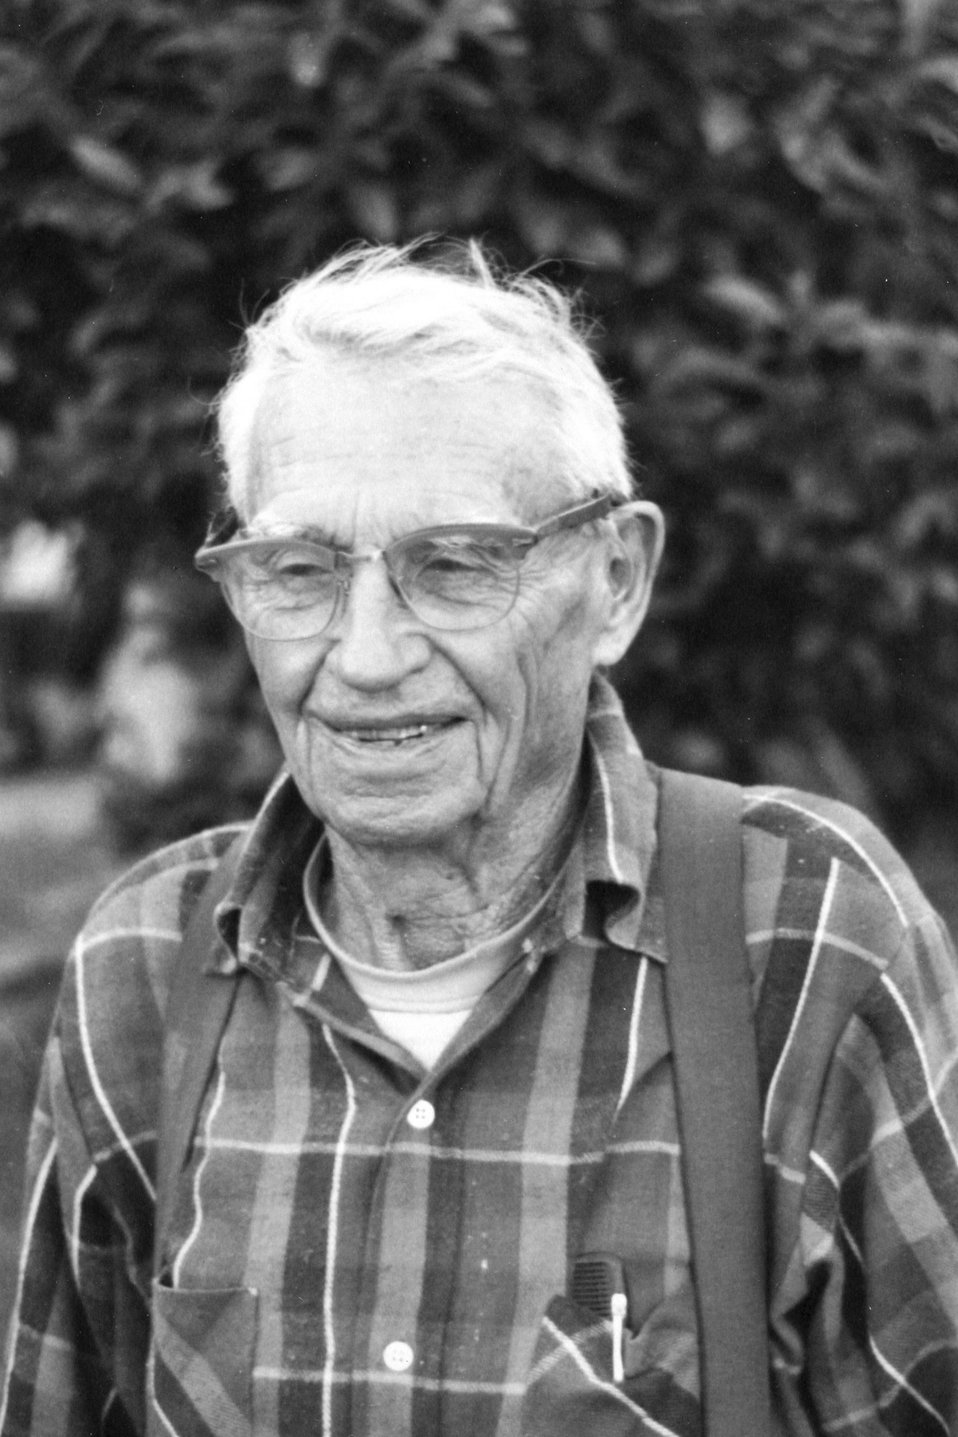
Leo Frye.